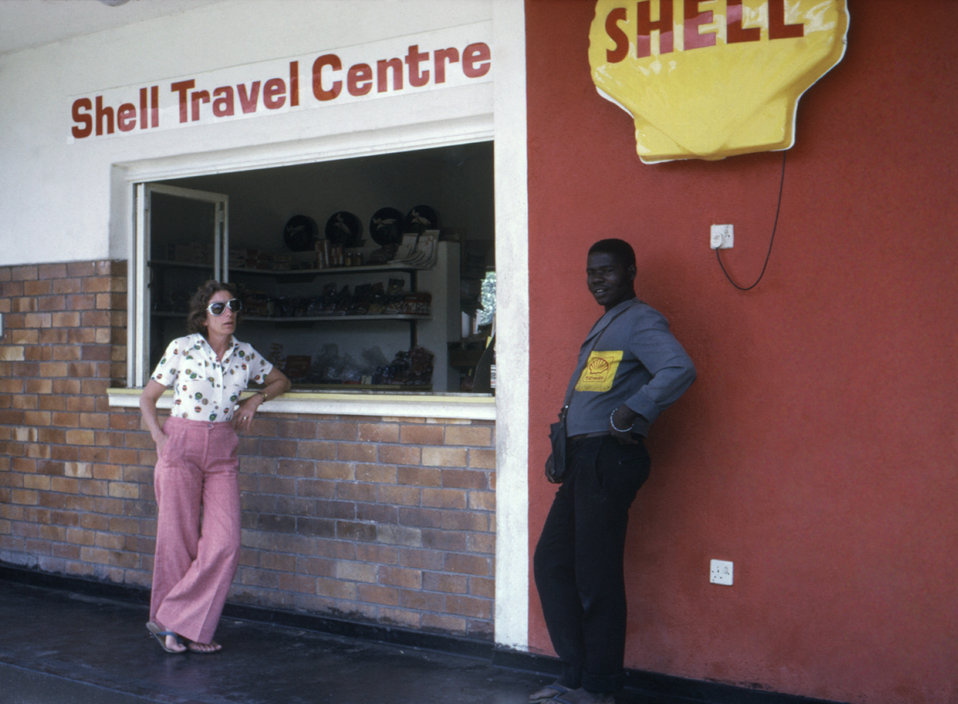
This 1975 photograph was taken during the Rhodesian, now Zimbabwean Marburg investigation, after two hitchhikers, who stopped at this location a month earlier, fell ill with the Marburg hemorrhagic fever.